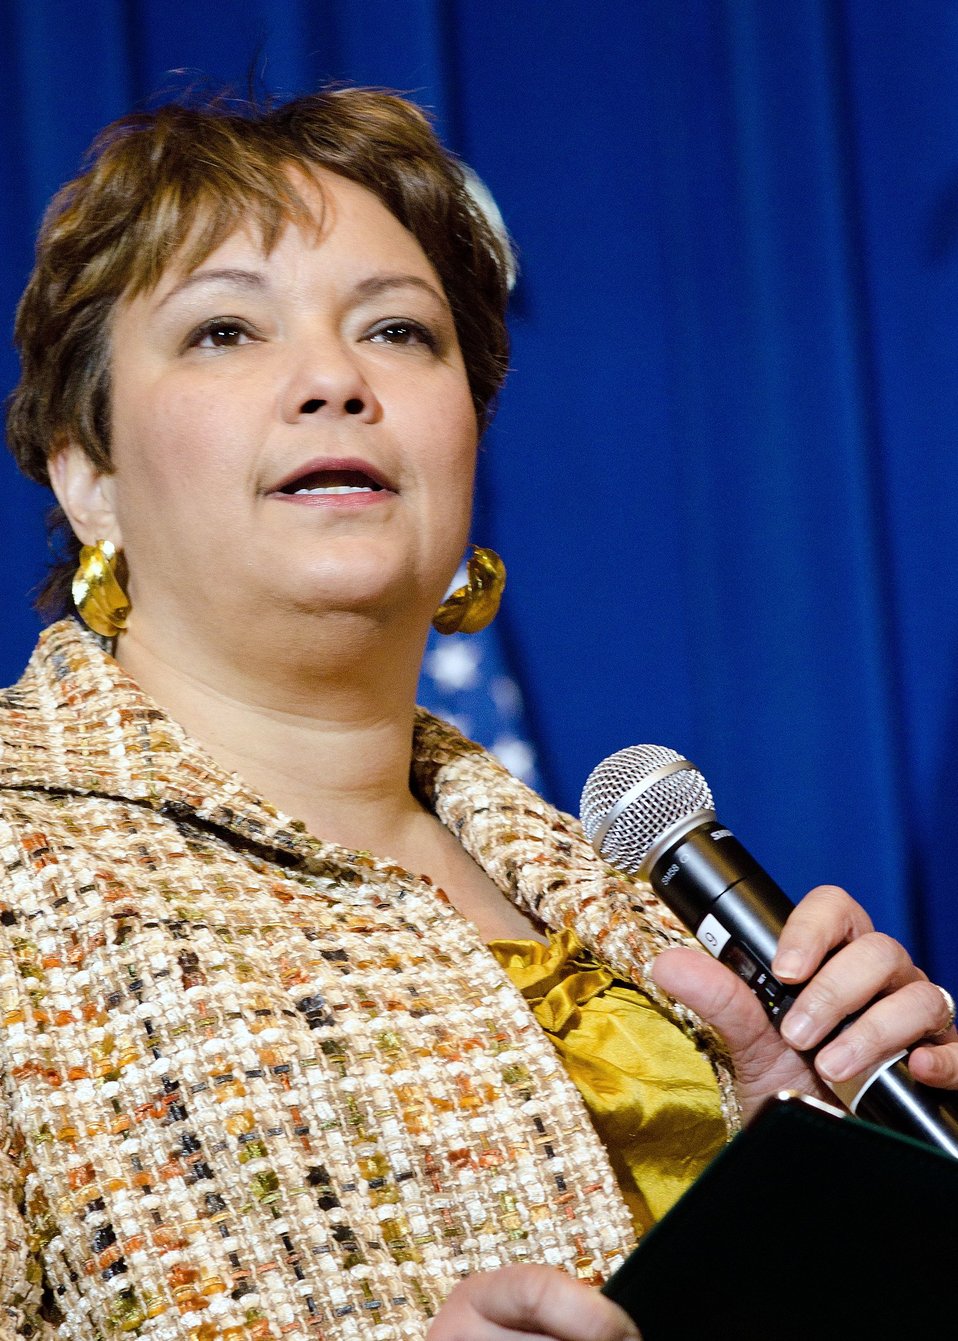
Environmental Protection Agency Administrator Lisa Jackson made opening remarks at the White House Conservation Summit “Growing America’s Outdoor Heritage and Economy” held at the Interior Department in Washington, D.C. on Friday, March 2, 2012. This conference was part of President Barrack Obama’s, “America’s Great Outdoors Initiative” to spotlight community-driven conservation efforts and discussed how to build their success.